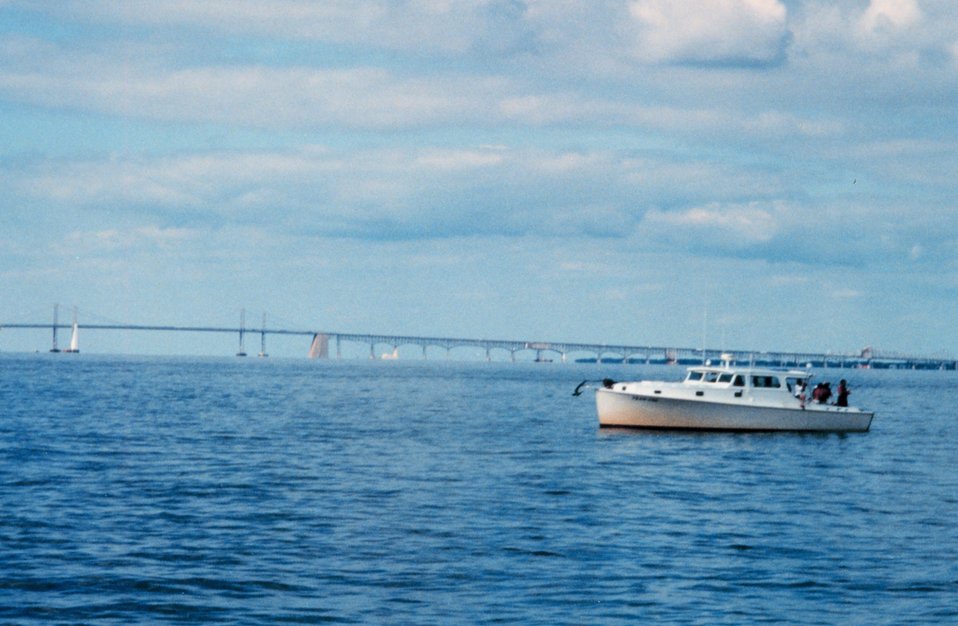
Fishing boat south of the Chesapeake Bay Bridge near the Severn River.